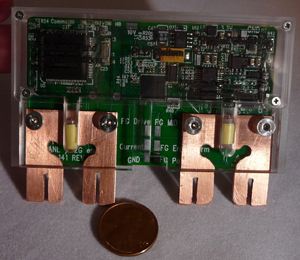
A PROTOTYPE OF ARGONNE NATIONAL LABORATORY'S COMPACT METROLOGY SYSTEM.

Smart grid metrology systems are end-use measurement devices (EUMD) that measure and communicate energy usage information to ensure consumption readings and fair billing. This groundbreaking technology is getting international attention due to is low price of less than $30per unit and its compact size. This technology would also be an alternative to installing a secondary charging meter specifically for charging an electric vehicle.